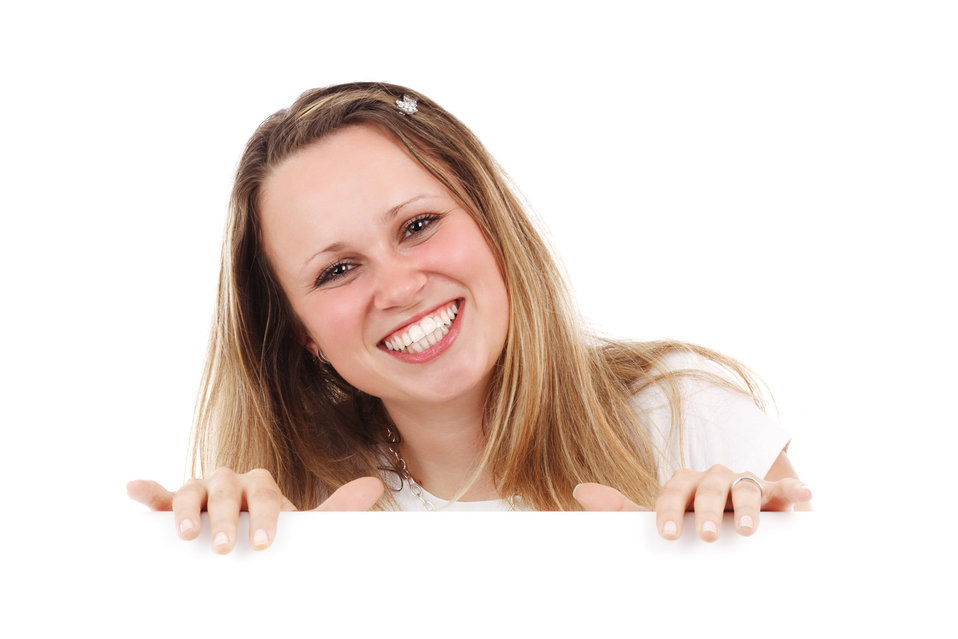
Smiling woman behind board

Young woman smiling behind a white board.